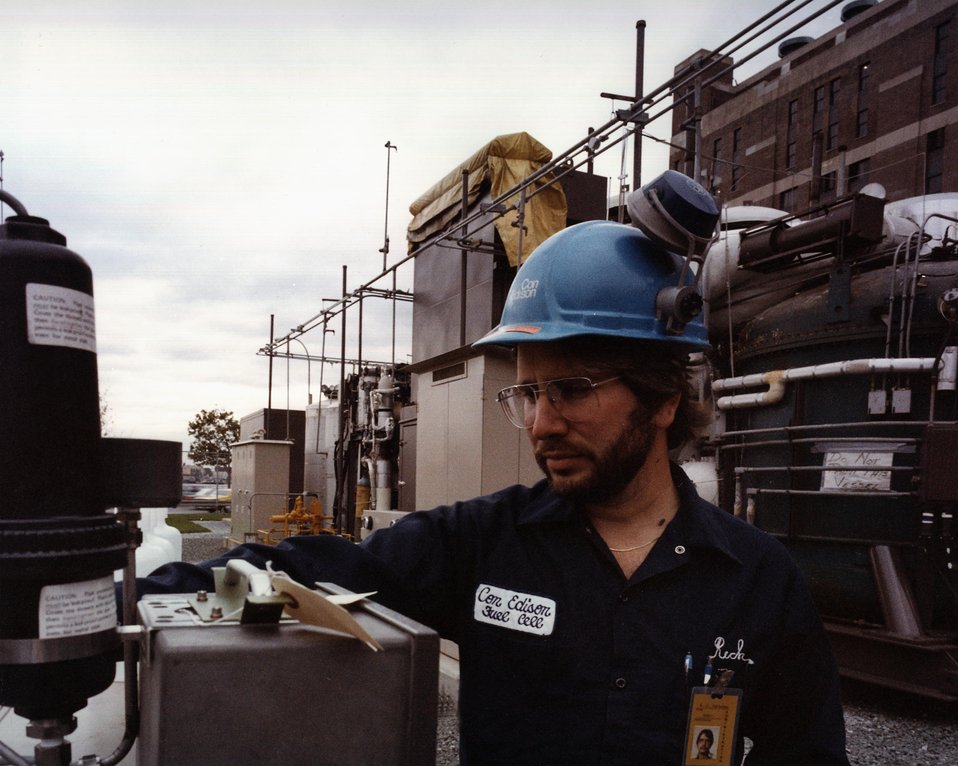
CON EDISON WORKER DURING INSTALLATION OF THE FUEL CELL POWER PLANT.

THE 4.8-MW FUEL CELL POWER PLANT CONTAINS A FUEL PROCESSOR FOR ENRICHING HYDROCARBON FUEL WITH HYDROGEN, A FUEL CELL POWER SECTION IN WHICH THE PROCESSED FUEL AND AIR REACT TO GENERATE DC POWER, AND AN INVERTER IN WHICH THE DC IS CHANGED TO AC. THIS TYPE OF POWER PLANT IS ESPECIALLY SUITED TO URBAN AND OTHER DENSELY POPULATED AREAS BECAUSE IT IS A MODULAR SYSTEM WHICH IS EASY TO TRANSPORT BY TRUCK AND ASSEMBLE IN A SMALL AREA. OTHER ADVANTAGES ARE ITS ALMOST NOISELESS OPERATION, LACK OF POLLUTION, AND ABILITY TO OPERATE WITHOUT LARGE QUANTITIES OF WATER. THE 4.8-MW FUEL CELL POWER PLANT IS BEING INSTALLED IN NEW YORK CITY AND WILL EVENTUALLY BE INTEGRATED INTO THE CONSOLIDATED EDISON UTILITY NETWORK.